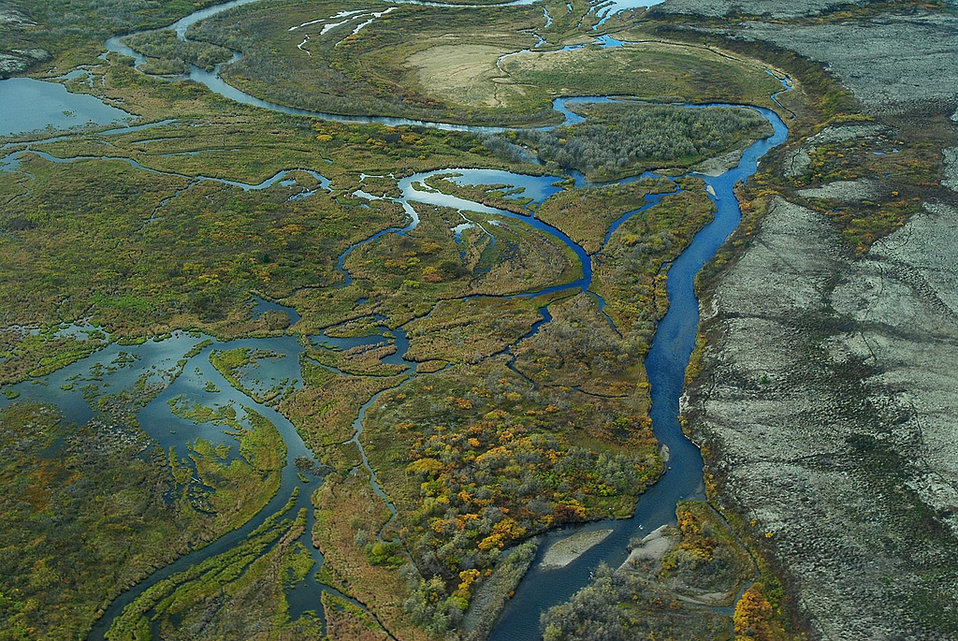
July 26, 2010 Stunning wetlands

Aerial view of braided wetlands and tundra that is typical of the Bristol Bay watershed in Alaska.

Upper Talarik Creek (shown here) flows into Lake Iliamna and then the Kvichak River before emptying into Bristol Bay.
Visit www.epa.gov/bristolbay for information about EPA's Bristol Bay Watershed Assessment